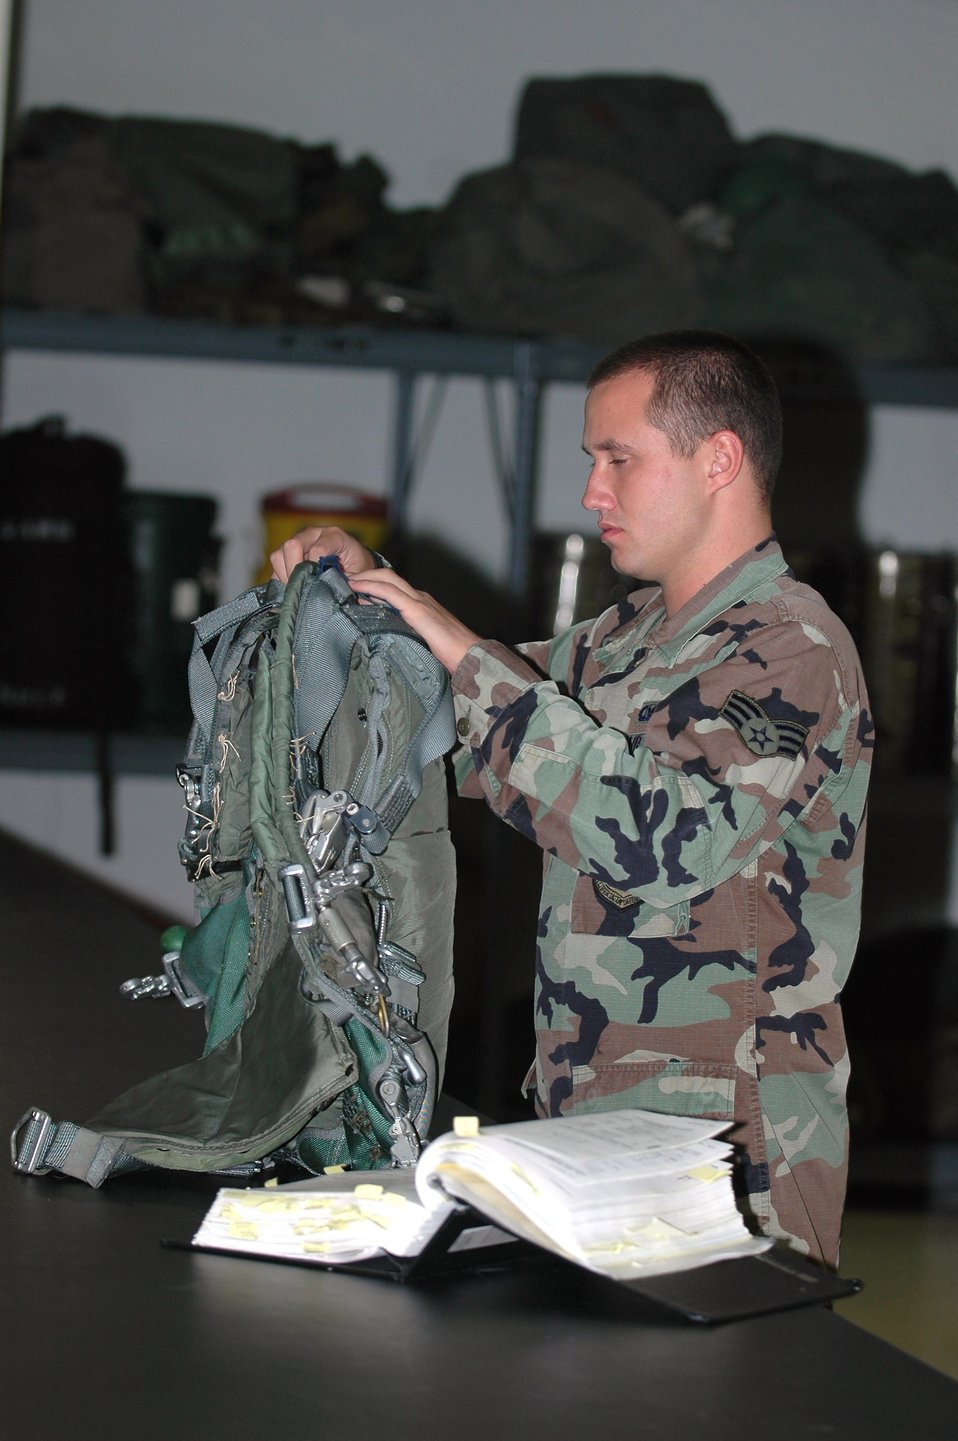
The flow behind the mission

Senior Airman Joshua Beers inspects a parachute for a KC-135 Stratotanker. This item is inspected every 30 days. Airman Beers is a life support technician with the 20th Expeditionary Bomb Squadron at a forward deployed location supporting Operation Enduring Freedom. He is deployed from Barksdale Air Force Base, La.